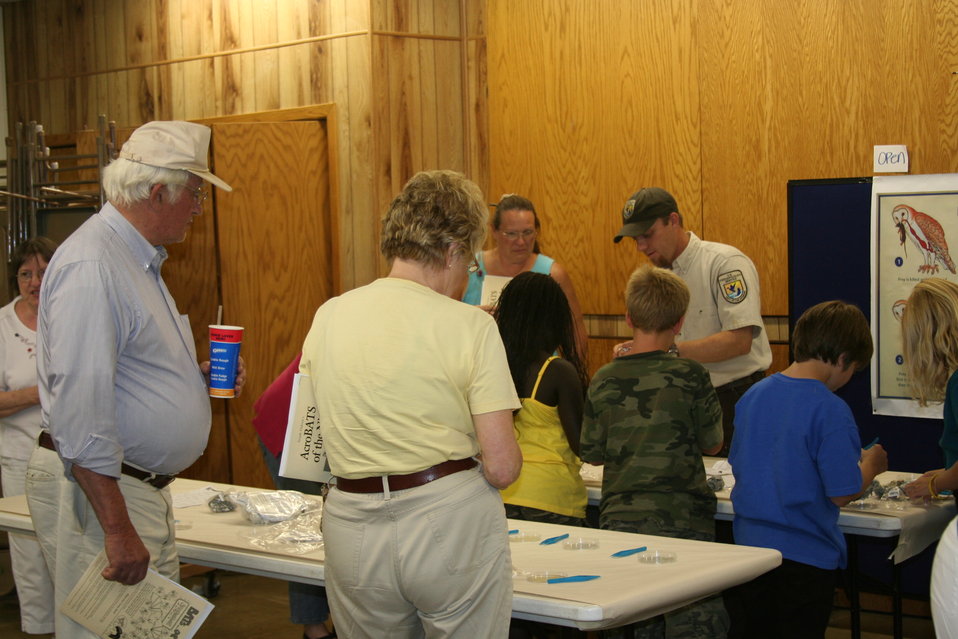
Creatures of the Night 2011